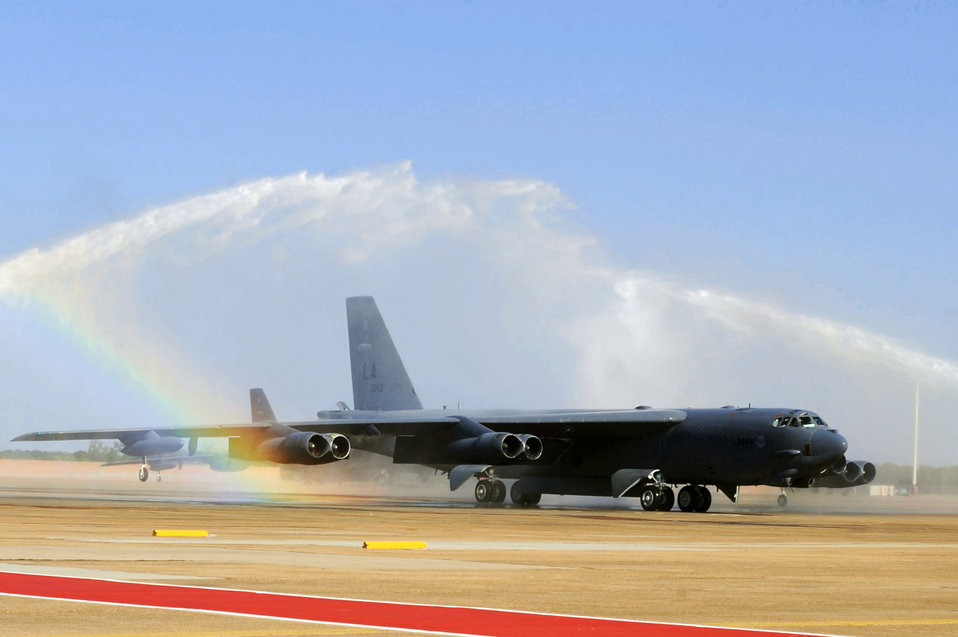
Good-bye

Col. Gregory Smith, 2nd Operations Group commander, maneuvers his B-52H Stratofortress through the water spray from fire trucks after his